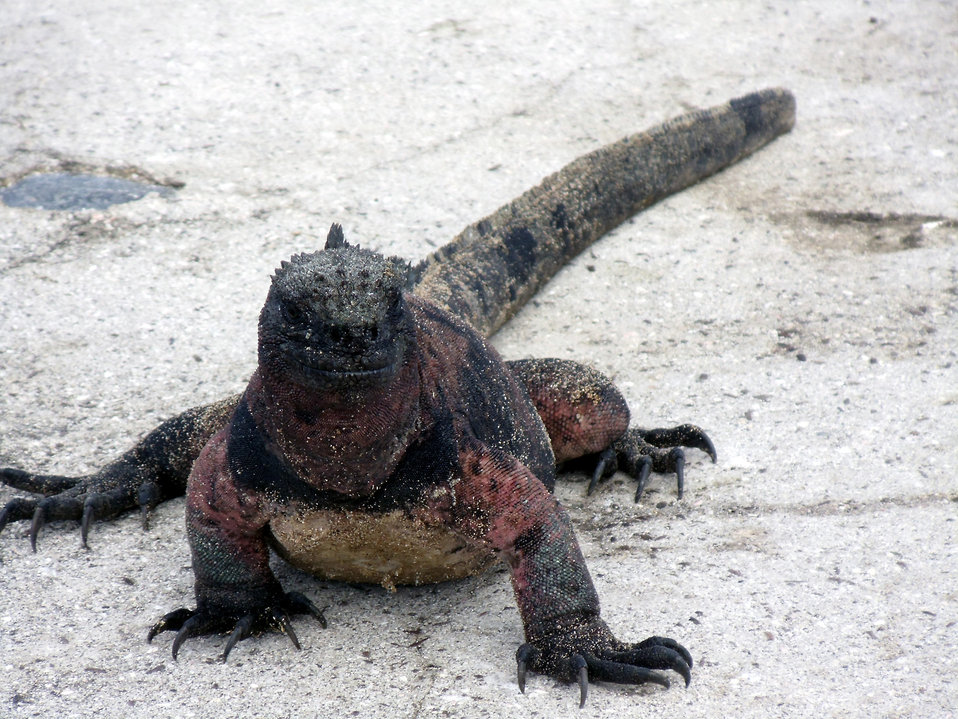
Salt water iguana close up

Salt water iguana in galapagos islands, ecuador.